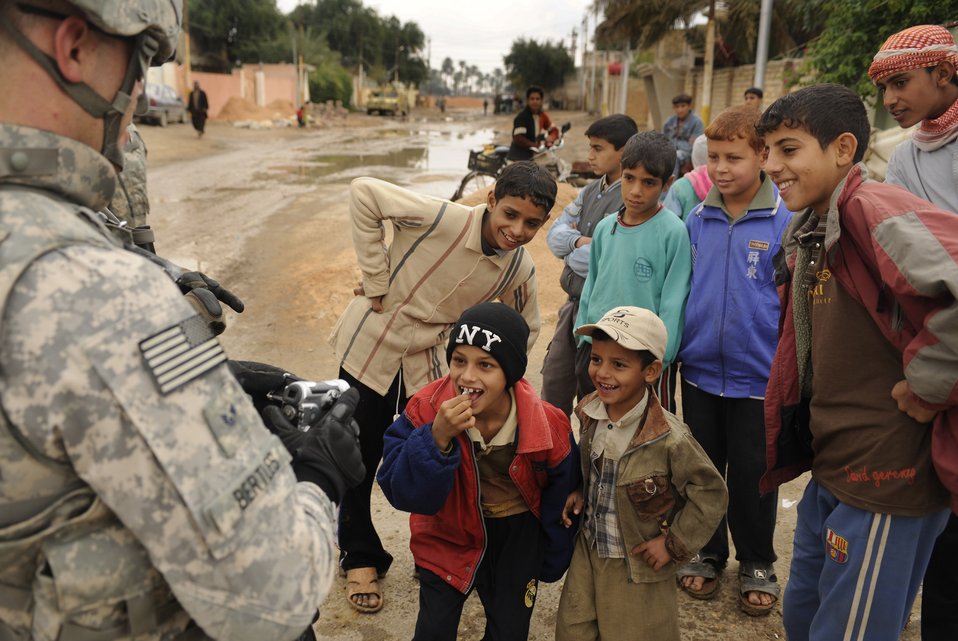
'Now that is some camera'

Iraqi children gather around Staff Sgt. David Bertles as he documents cordon and knock operations Nov. 30 in Afak, Iraq. The sergeant is assigned to the 1st Combat Camera Squadron at Charleston Air Force Base, S.C.